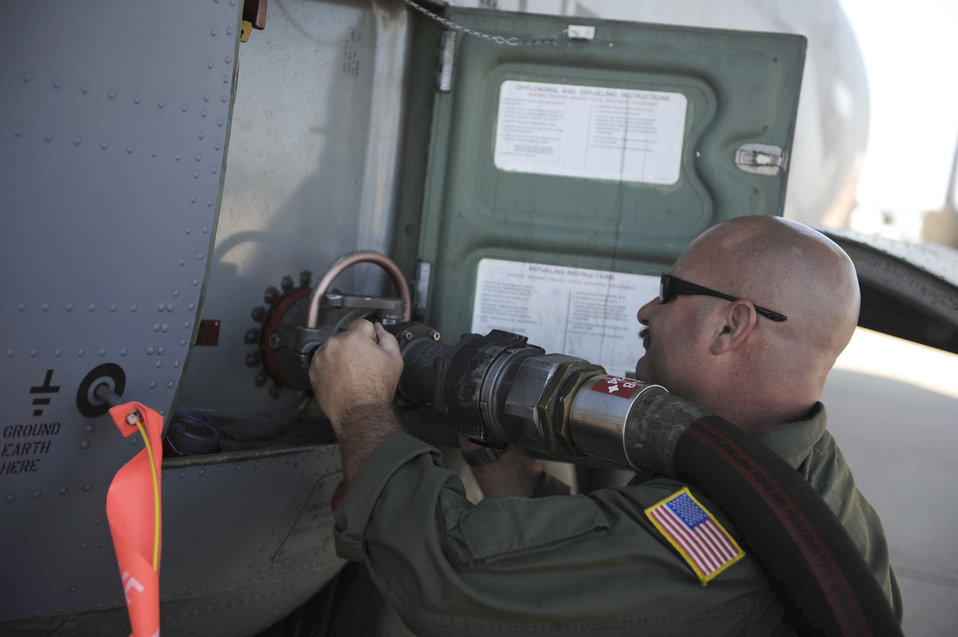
Texas Wildfires

Master Sgt. Chuck Watkins connects a fuel hose to a C-130 Hercules, while preparing the aircraft for wildfire fighting operations across Texas April 18, 2011, at Dyess Air Force Base, Texas. The C-130 is equipped with the Modular Airborne Firefighting System, which is capable of dispensing 3,000 gallons of water or fire retardant in less than 5 seconds. Sergeant Watkins is assigned to the California Air National Guard's 115th Airlift Squadron.